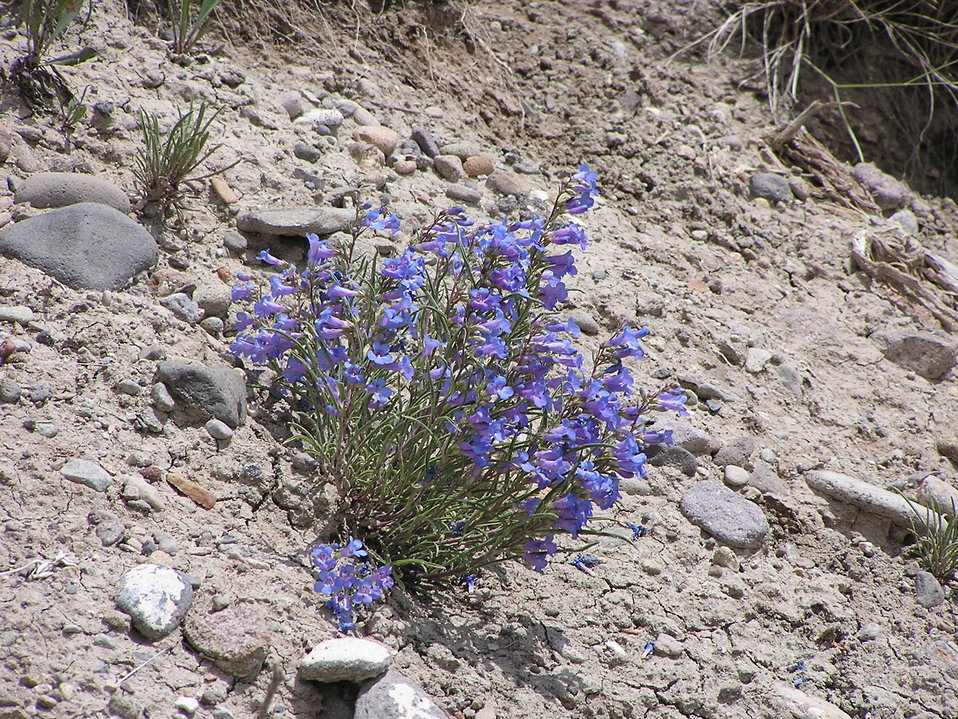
Kremmling beardtongue

The Kremmling beardtongue (also known as the Penland beard-tongue) is a herbaceous (non-woody) plant species in the plan-tain family (Plantaginaceae) (formerly in the figwort family). It is a compact, clumping plant with straight and pointed dark green, inrolled leaves. The plant grows 2 to 6 inches tall and up to 8 inches wide from a spreading and deep root system, which secures the plant in the highly erodible soils of its habitat. Its flowers are blue-violet and tubular, measuring 3/4 inch long. In June and July you can find the showy Kremmling beardtongue in bloom.